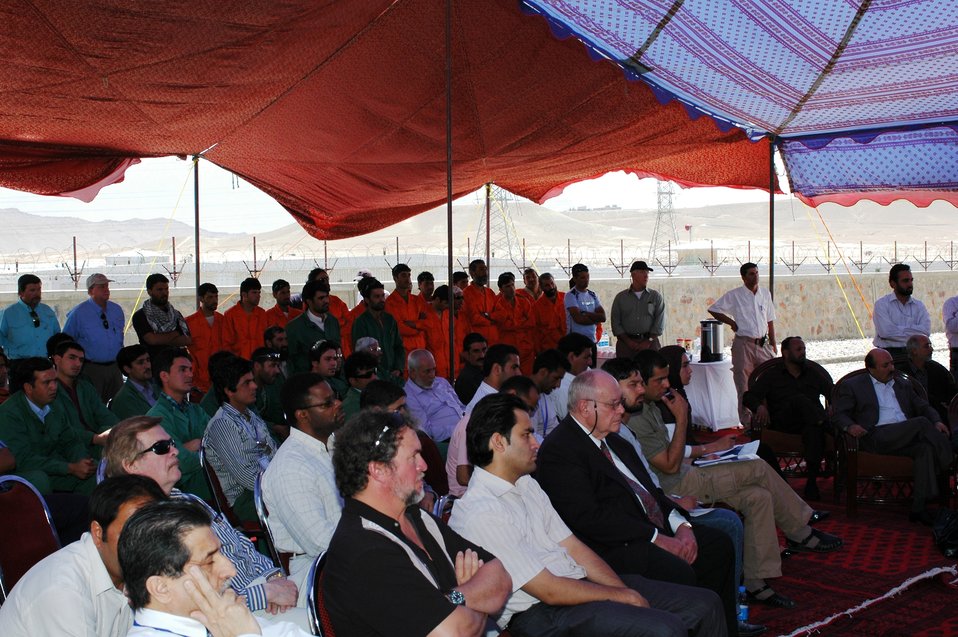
105 MW Tarakhil Power Plant Handover